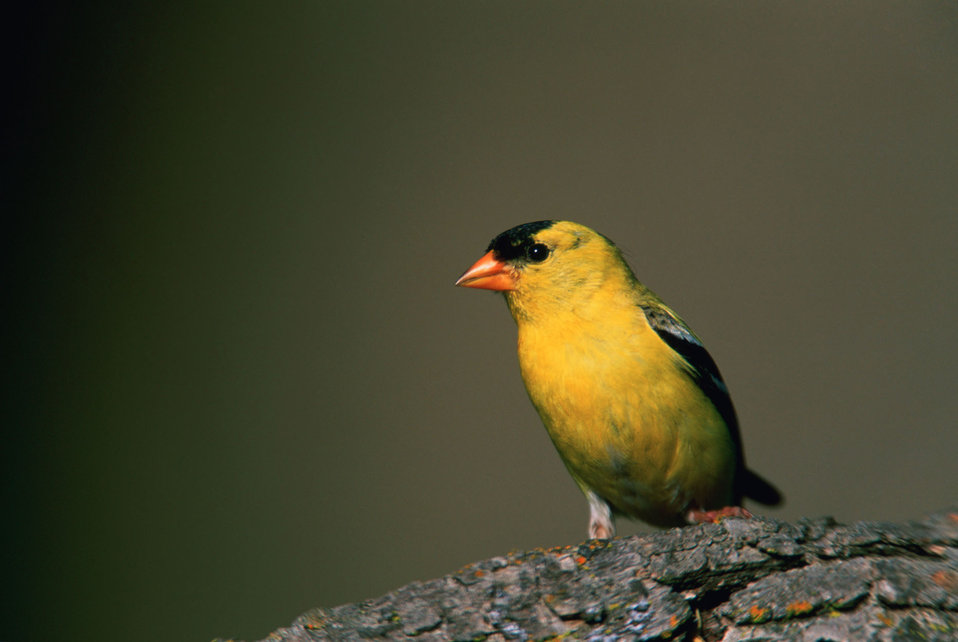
American goldfinch

An American goldfinch is seen perching.